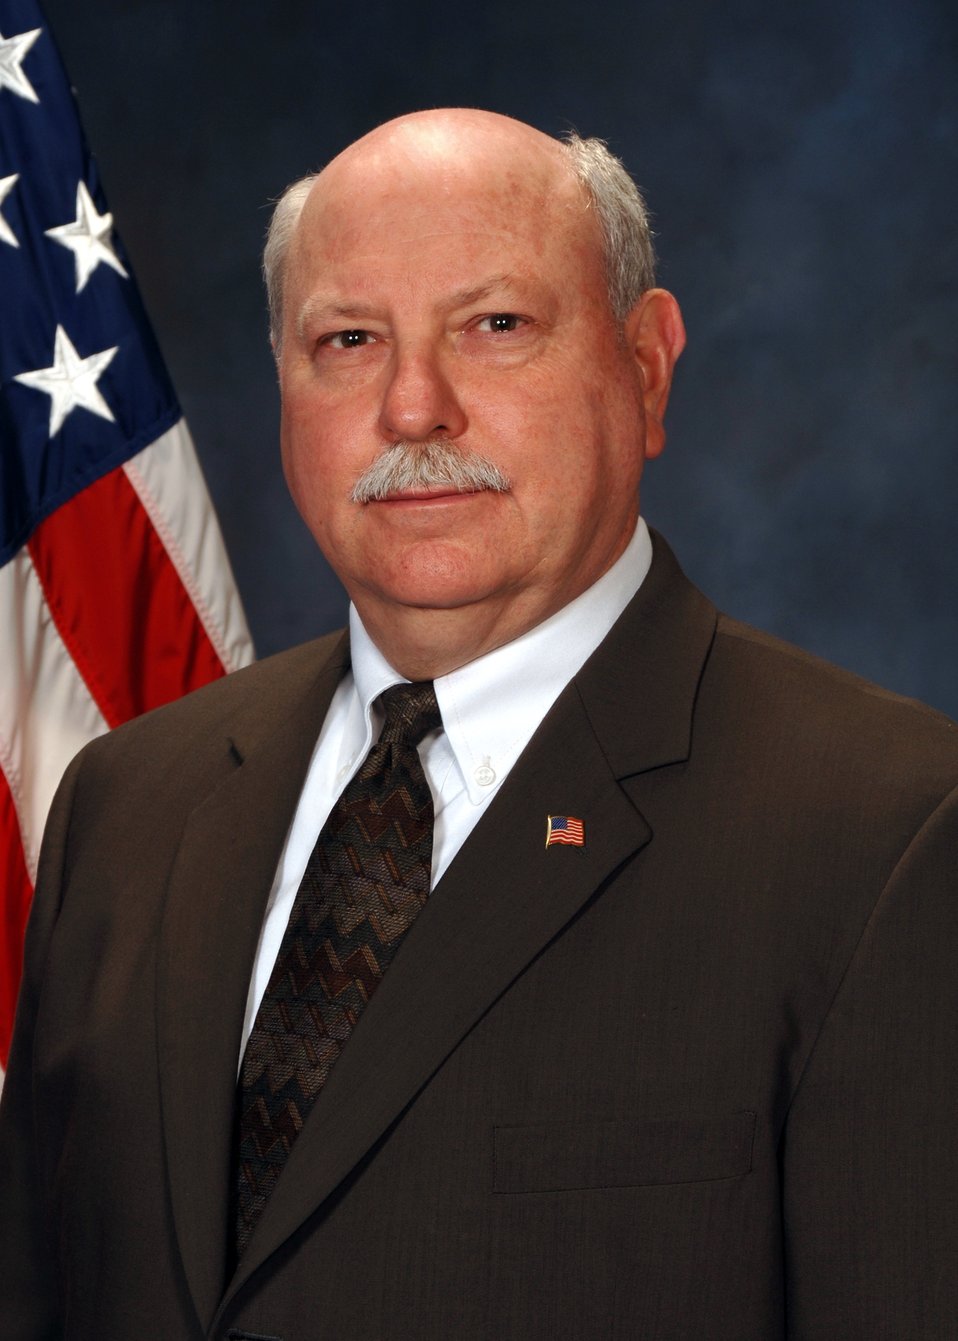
Former technical director for C-17 earns DOD award

Lawrence Fielding, former technical director for the Aeronautical Systems Center's C-17 Globemaster III program at Wright-Patterson Air Force Base, Ohio, has won a Department of Defense Distinguished Civilian Service Award for 2006.